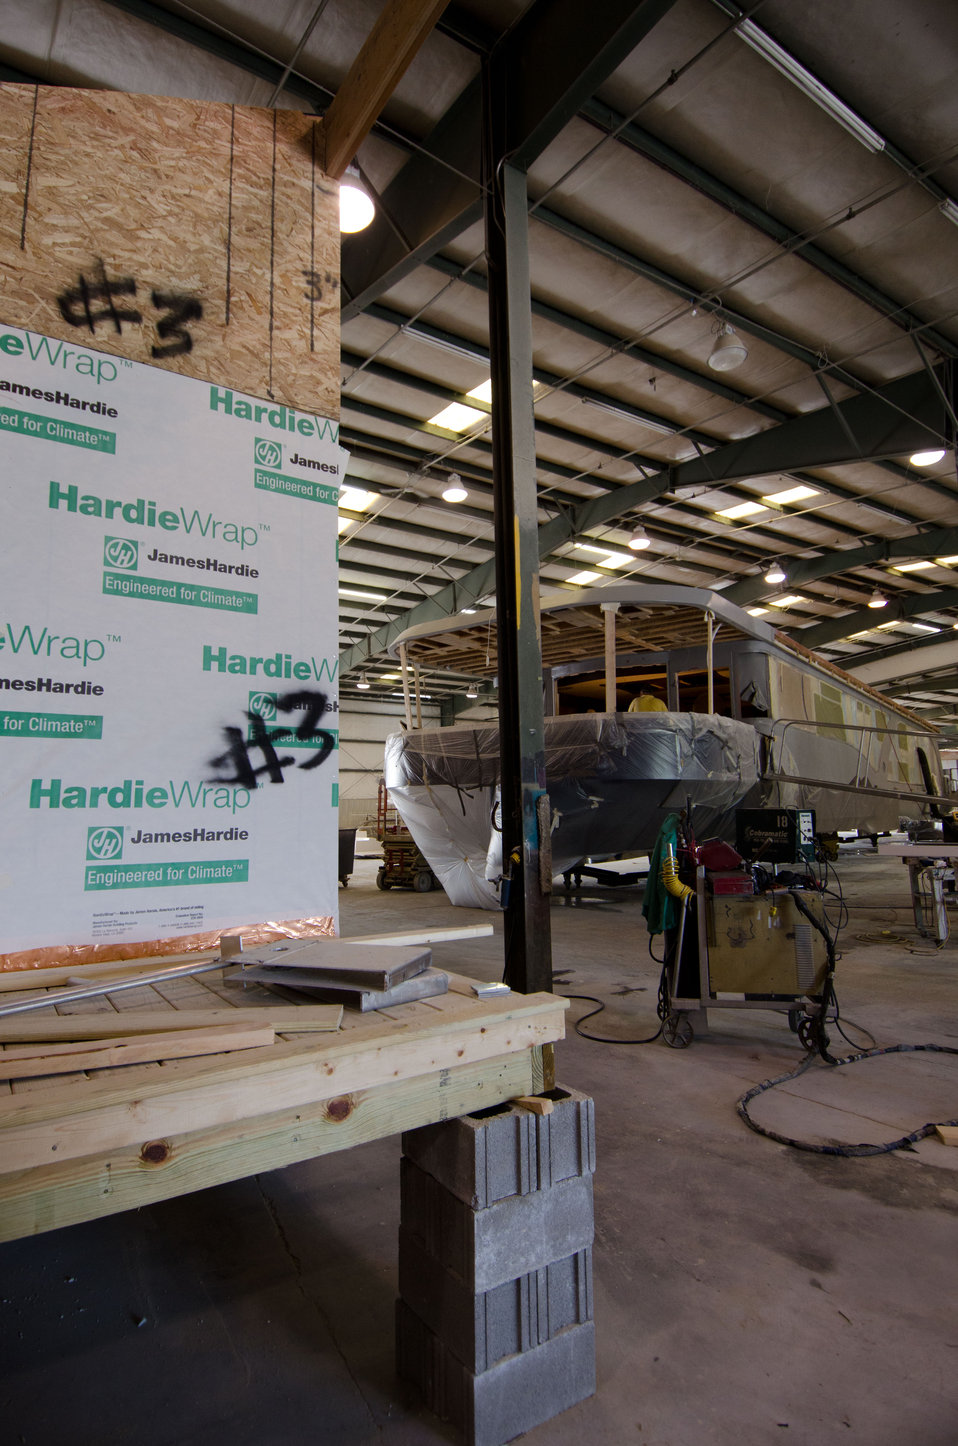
A corner of a prototype energy efficient manufactured home is being built near Stardust Industries' mainstay product, luxury houseboats on Wednesday, July 13, 2011. They are helping retool and redirect Kentucky’s houseboat manufacturing industry – which has been decimated because of the struggling economy – by using its facilities and manpower to create low-cost housing that is energy efficient. Rural Development obligated $499,000 in Rural Business Enterprise Grant funds to support this unique endeavor. Up until a few years ago, there were several successful houseboat manufacturers in the four-county area surrounding the city of Somerset. Most have now ceased operation or drastically reduced output, which has led to dramatic, long-term job loss. These new energy efficient homes will be constructed in redesigned, refitted houseboat factories using local workers that have been retrained.